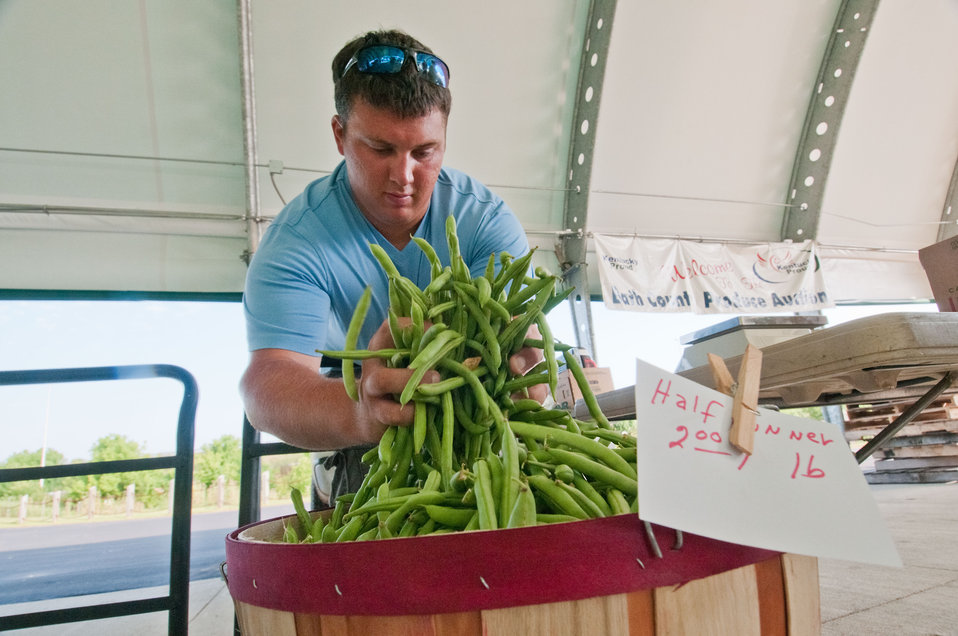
Shandy Karrick gathers a bundle of Half Runner heirloom beans for his customer at the Bath County Agricultural Education and Marketing Center, Owingsville, KY, on Friday, July 15, 2011. The Center was the recipient of a $400,000 Rural Business Enterprise Grant. It has given farmers and producers from Bath and surrounding counties the opportunity to manufacture and market their locally grown and locally produced value-added and “Kentucky Proud” branded products, including but not limited to, fresh produce, artisan crafts and specialty food products. The Center is open year-round and allow residents to sell products in four different retail categories, including Kentucky products, regional crafts, “green” groceries and bakery/deli. Several producers expressed their gratitude for Rural Development’s assistance in making the center a reality. The project was made possible through funding the American Recovery and Reinvestment Act of 2009 enacted by the 111th United States Congress in February 2009 and signed into law on February 17, 2009, by President Barack Obama.